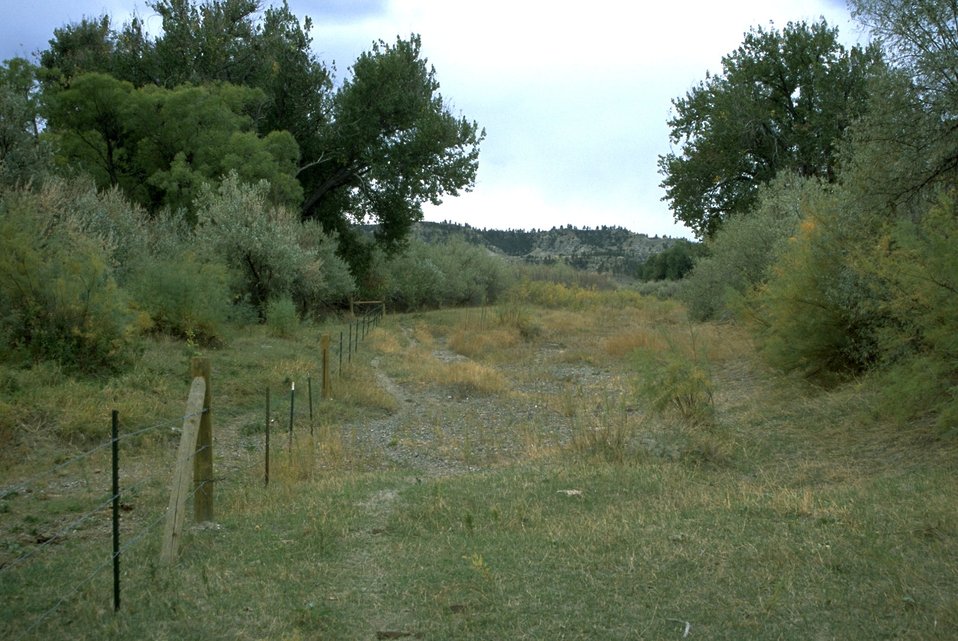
Fence in the Howrey Island Recreation Area